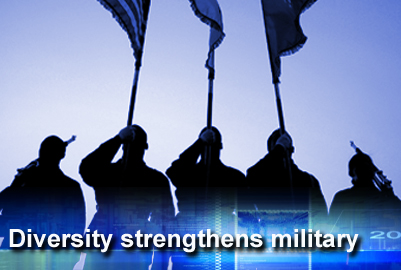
Diversity strengthens military

The strength of the military is improved by the diverse backgrounds of those who make up the organization, a senior National Guard officer said May 3, 2010.